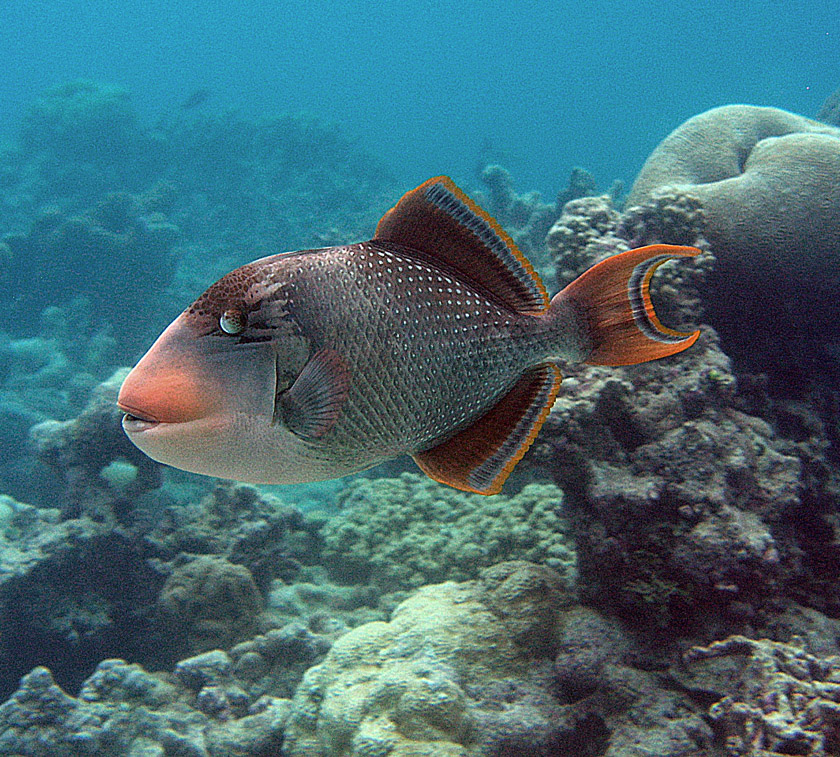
Yellow margin trigger fish